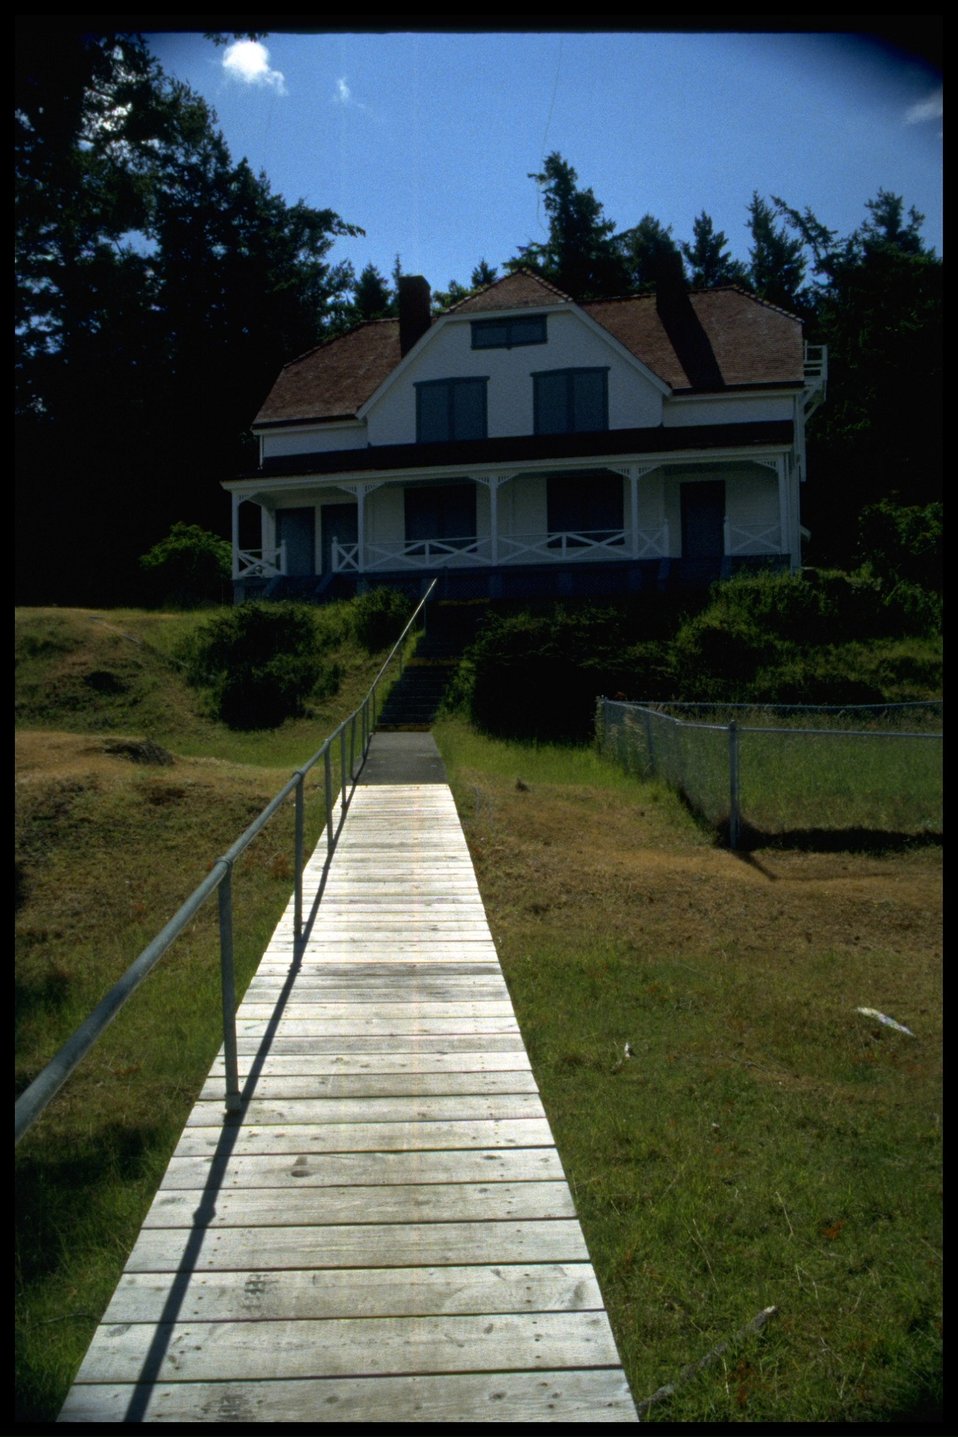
Looking from Turn Point lighthouse toward the living quarters.